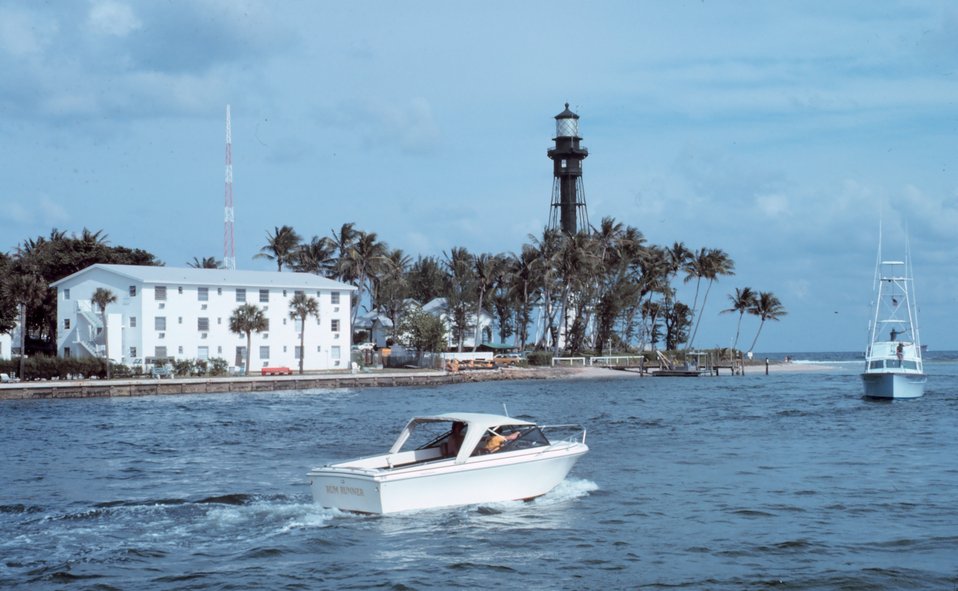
The Hillsboro Lighthouse at Pompano Beach